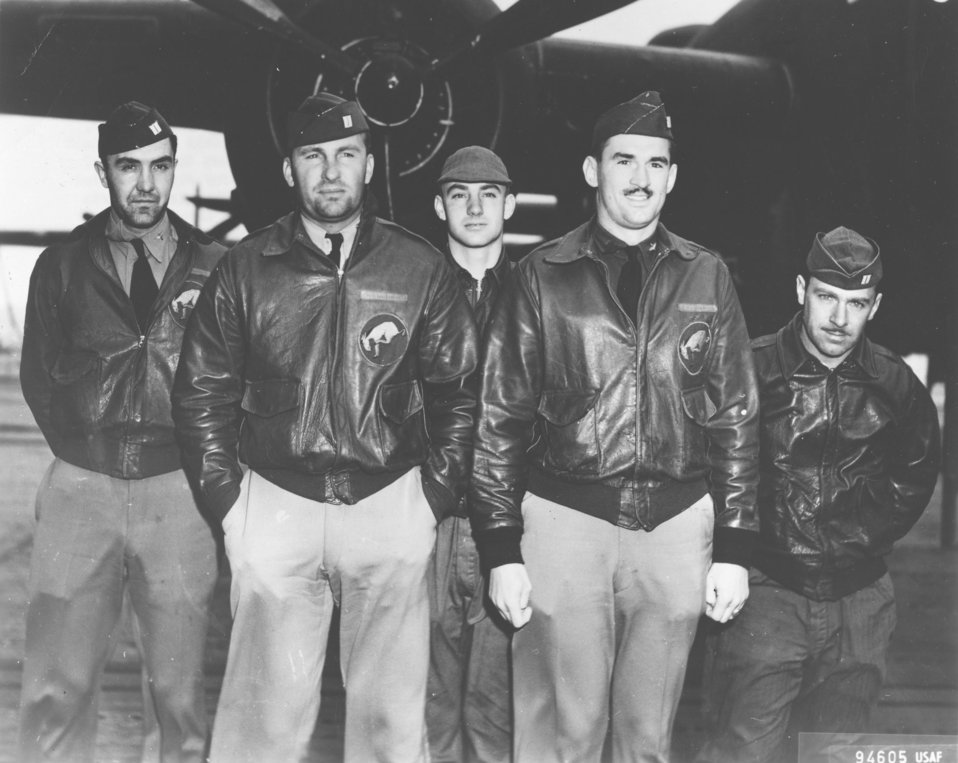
Doolittle Tokyo Raiders, Crew No. 6

Crew No. 6 (Plane #40-2298, target Tokyo): 95th Bombardment Squadron, front row: Lt. Dean E. Hallmark, pilot; and Lt. Robert J. Meder, copilot; back row: Lt. Chase J. Nielsen, navigator; Sgt. William J. Dieter, bombardier; and Sgt. Donald E. Fitzmaurice, flight engineer/gunner.